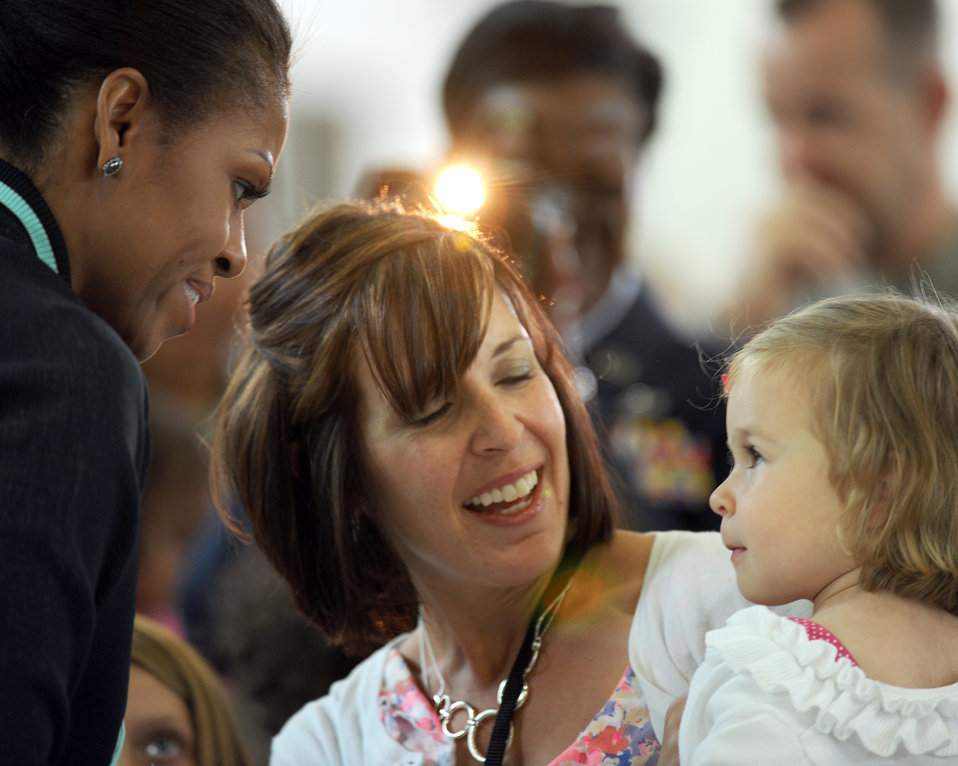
First lady visits RAF Mildenhall

First lady Michelle Obama greets U.S. military families at Royal Air Force Mildenhall, England, July 29, 2012. Obama stopped at the base as part of the “Joining Forces” initiative.